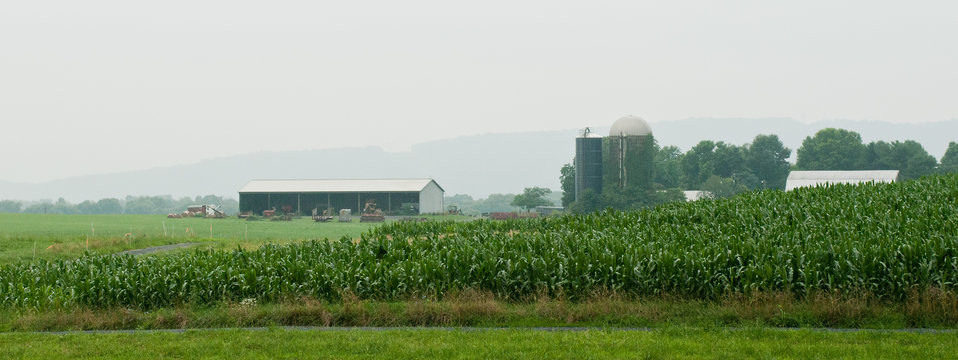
Nick’s Organic Farm, in Adamstown, MD, on Friday, July 12, 2013. The farm, owned by Nick Maravell, produces Black Angus beef, chicken, turkey, eggs, hay, soybeans, corn, alfalfa, orchard grass, rye; and other crops. The cattle are100% grass-fed receiving certified organic pasture, certified organic hay (in winter), water and mineral salts mixed with sea kelp. The cattle are not fed hormones, antibiotics or animal products. Poultry feed from grain is ground from organic grain. The poultry also graze on organic pastures. The farm has conducted on-farm research with federal, state and non-profit agencies to refine organic practices.